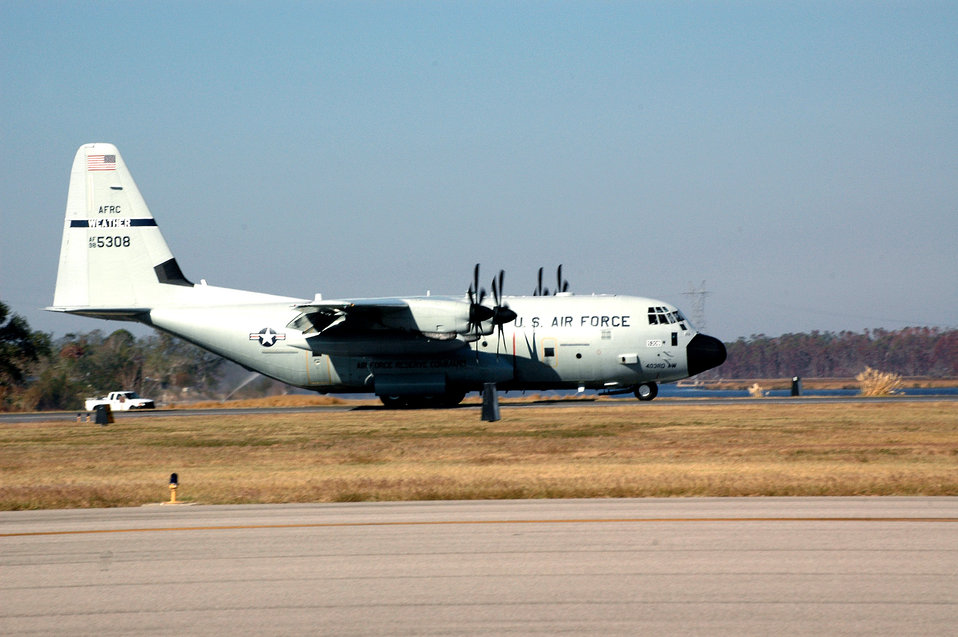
Back home

KEESLER AIR FORCE BASE, Miss. (AFPN) -- The final C-130J Hercules from the 403rd Wing here touched down after being forward deployed to Dobbins Air Reserve Base, Ga. The 403rd Wing mission, which includes the 53rd Weather Reconnaissance Squadron's